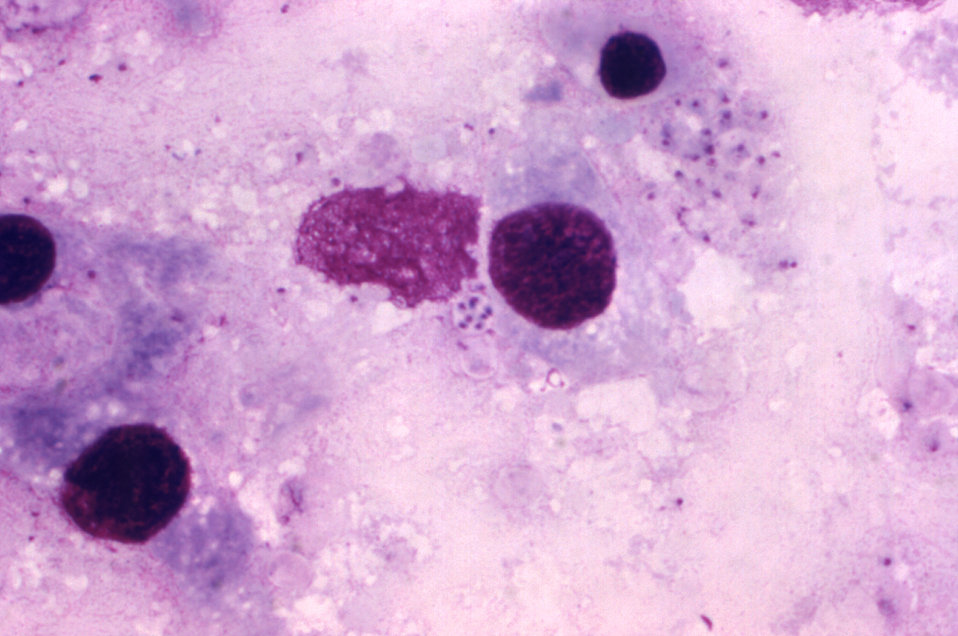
At a magnification of 1000X, this photomicrograph reveals Pneumocystis jirovecii fungi, which were present in this Giemsa-stained impression smear of rat lung tissue. Formerly known as Pneumocystis carinii, and classified as a protozoa, investigative tests upon this organism's nucleic acid and biochemical composition has since placed it in the Kingdom of Fungi.These fungi are found in the lungs of mammals where they reside without causing overt infection until the host's immune system becomes debilitated. Then, an oftentimes lethal pneumonia can result. Note the round cyst in the very middle of this image containing eight immature haploid neuclei, as well as numbers of freed trophozoites.